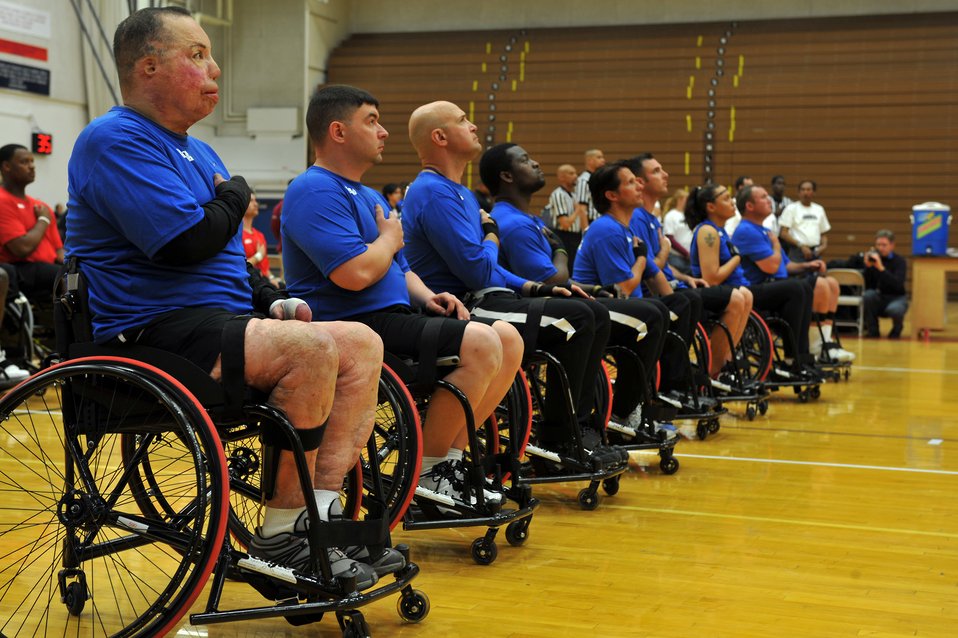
Warrior Games Team Air Force Basketball

Team Air Force raise their right hand above their hearts during the national anthem before playing a game of basketball against the Marines May 11, 2010, during the Warrior Games held at the Olympic Training Center, Colorado Springs, Colo. Warrior Games competition began May 10 and finishes on May 14.